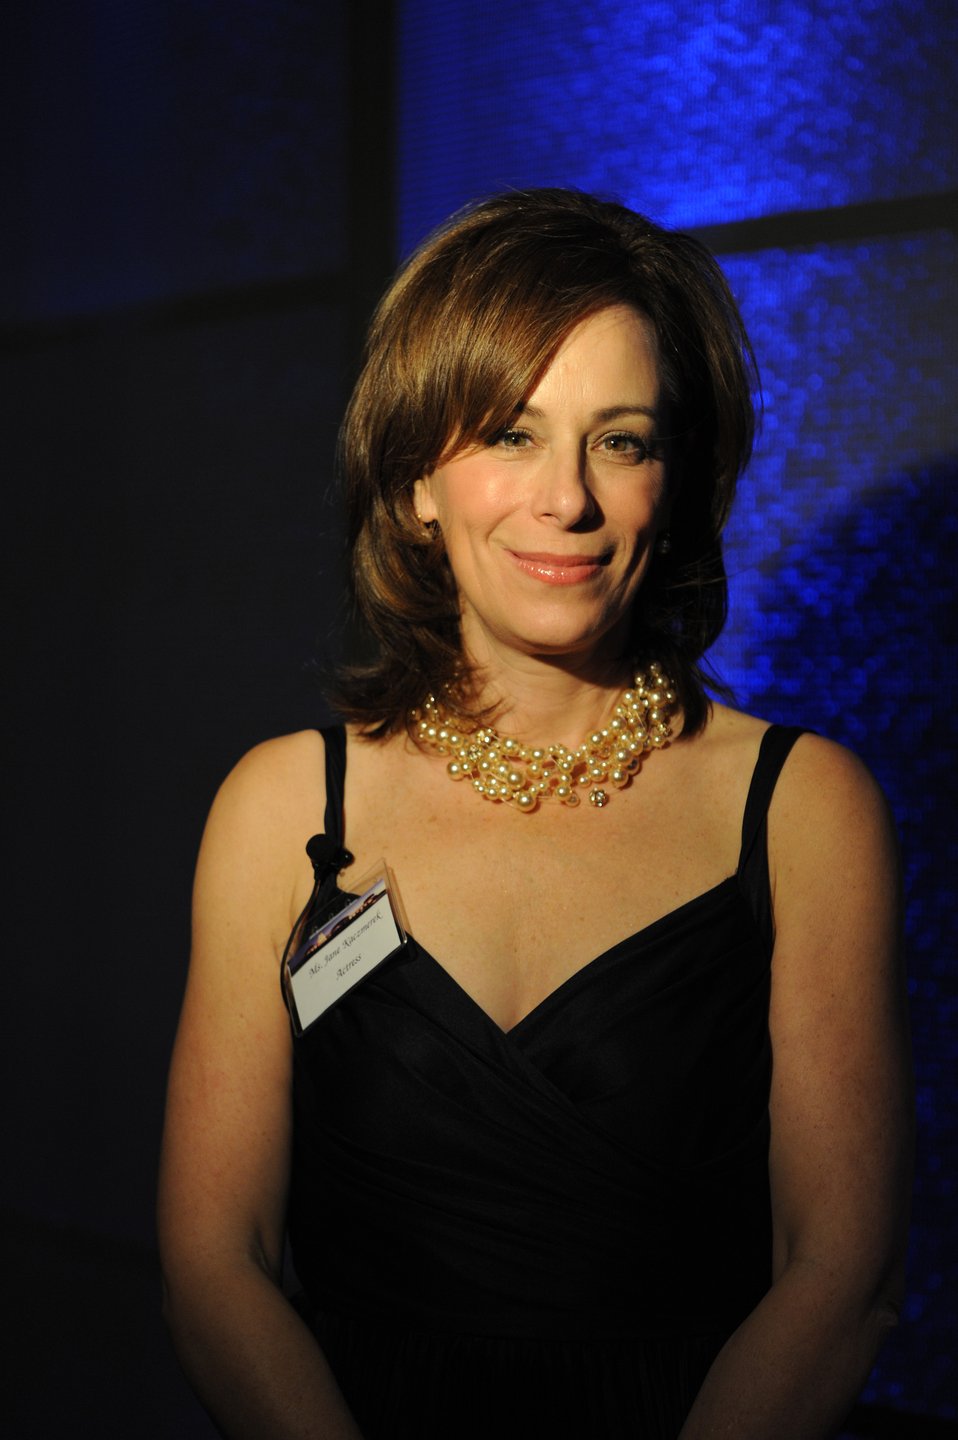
Stars visible at, from LA observatory

Jane Kaczmarek, a Friends of the Observatory member, attends an event at the Griffith Observatory to honor Air Force members Nov. 17 during Air Force Week Los Angeles. Ms. Kaczmarek is a critically acclaimed actress, starring in shows such as